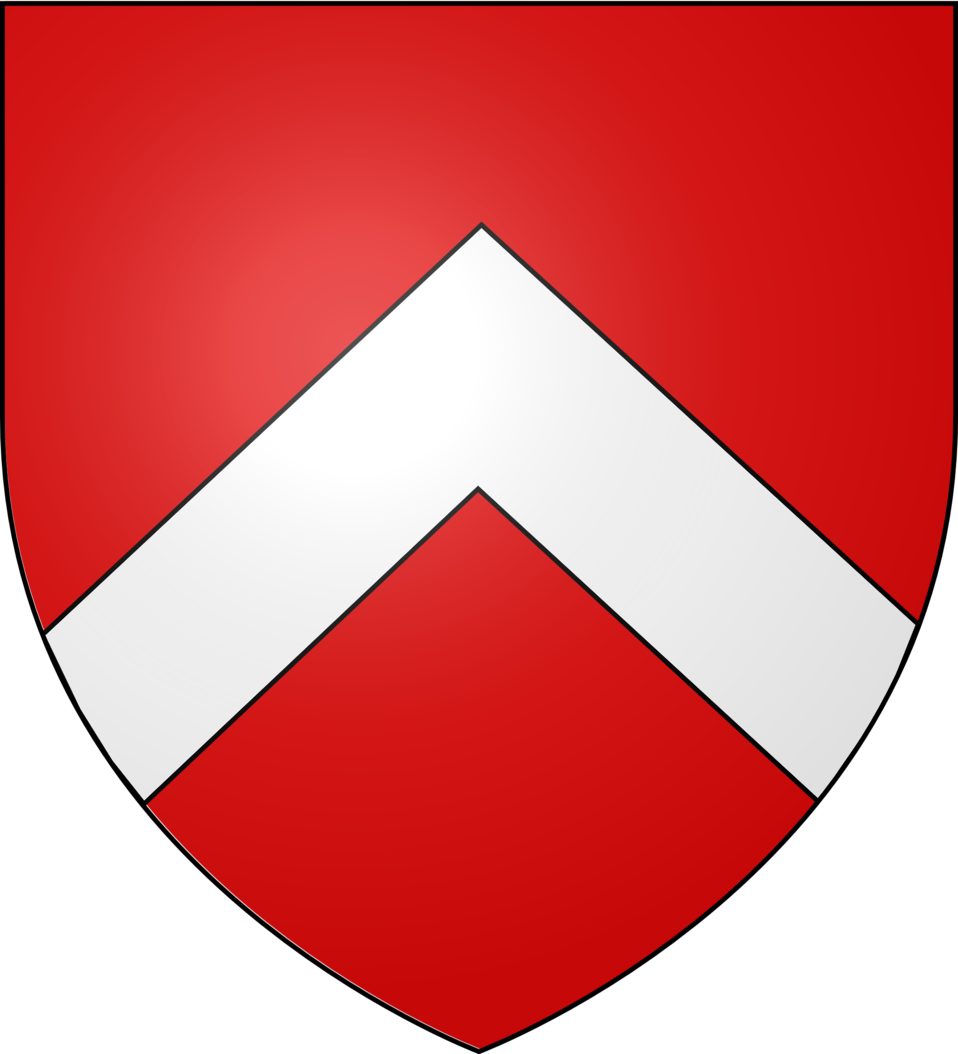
De gueules au chevron d'argent.